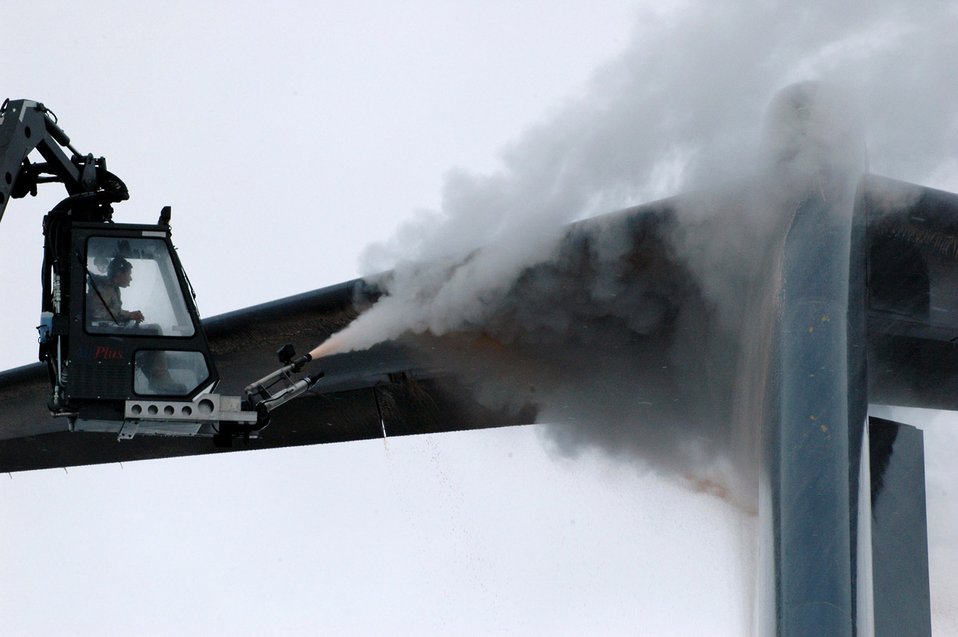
Ice is not nice

Airman 1st Class David Rosas de-ices a C-17 Globemaster III Feb. 20 prior to an airlift mission. Airman Rosas' de-icing cabin is suspended from the end of a 80-foot lift truck. He is with the 817th Expeditionary Airlift Squadron and is deployed from the 62nd Aircraft Maintenance Squadron at McChord Air Force Base, Wash.